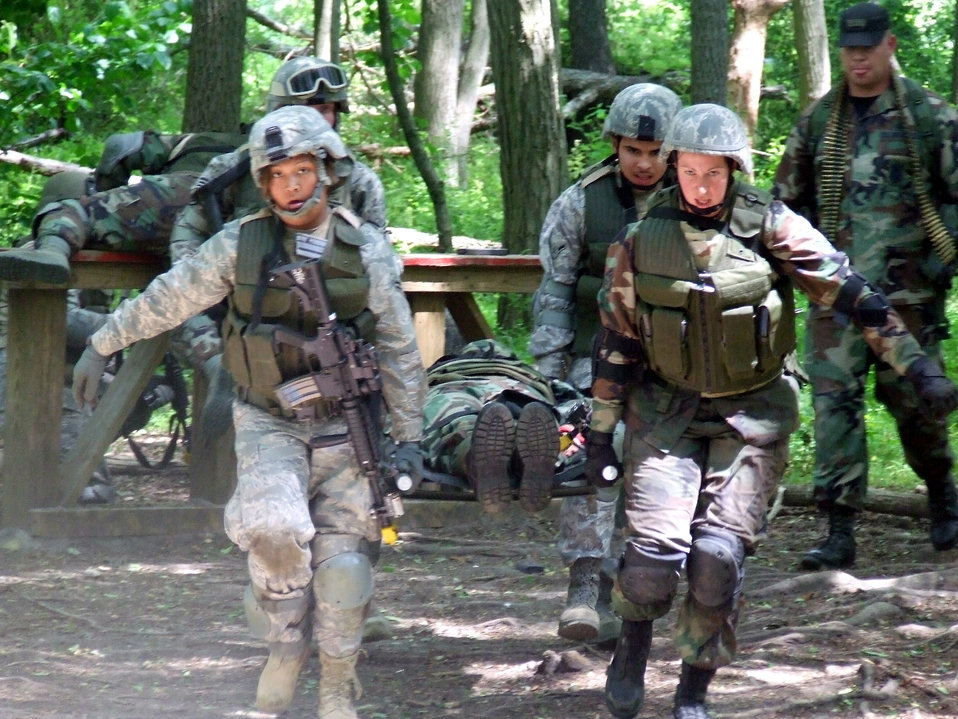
Warriors play

Students in the Air Force Phoenix Warrior Training Course participate in a combat first aid class June 19 at Fort Dix, N.J. The course is taught by the Air Force Expeditionary Center's Expeditionary Operations School and 421st Combat Training Squadron insturctors and prepares security forces Airmen for upcoming deployments.